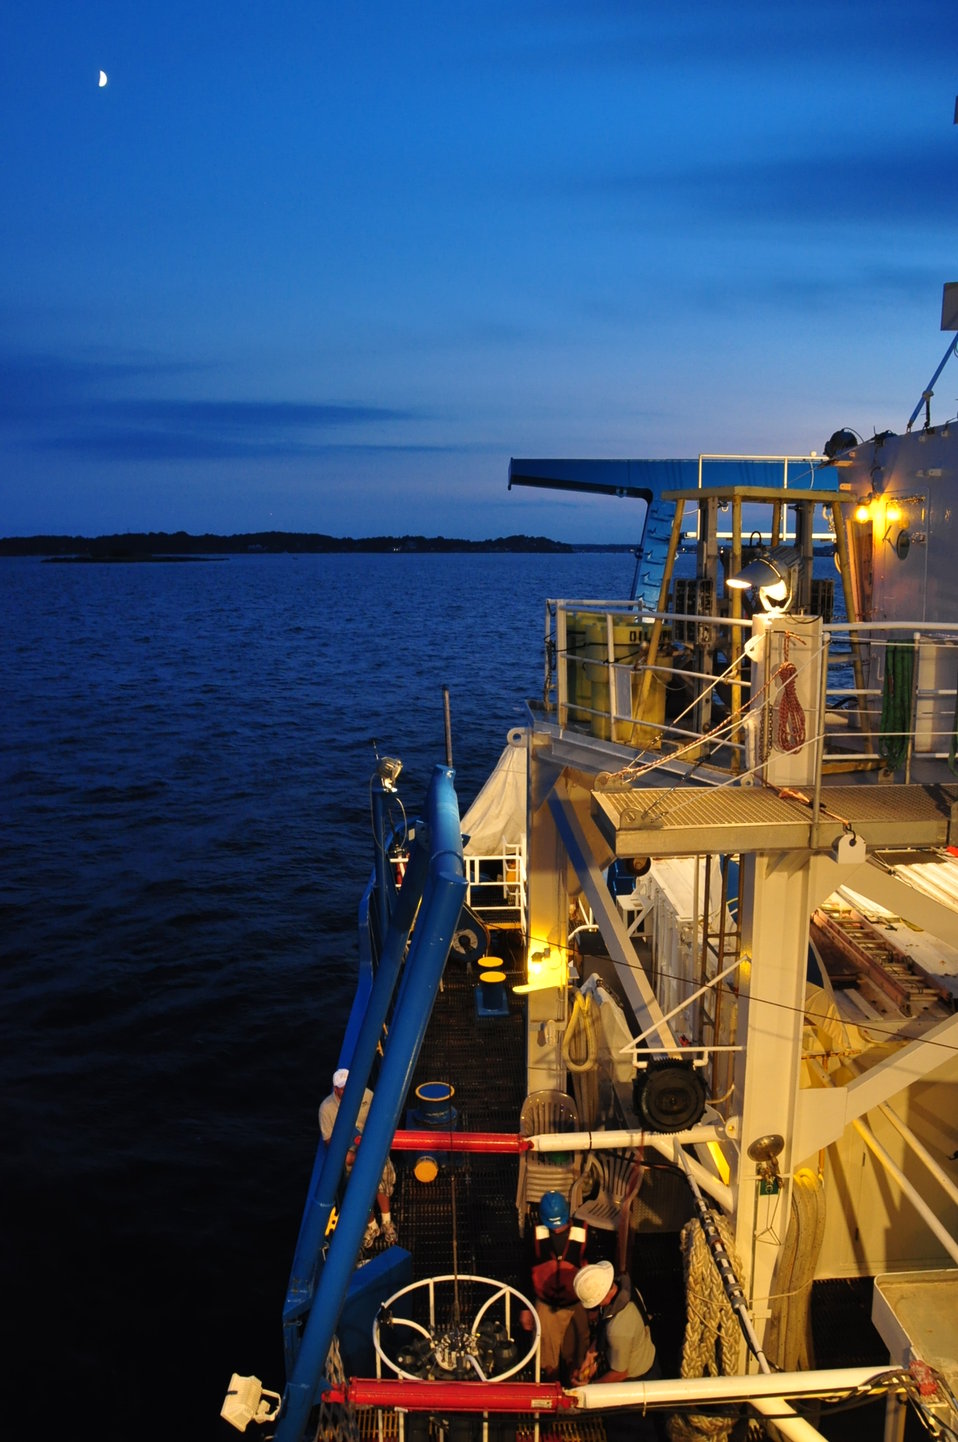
August 5, 2011 Distant moon pointed towards northern Massachusetts